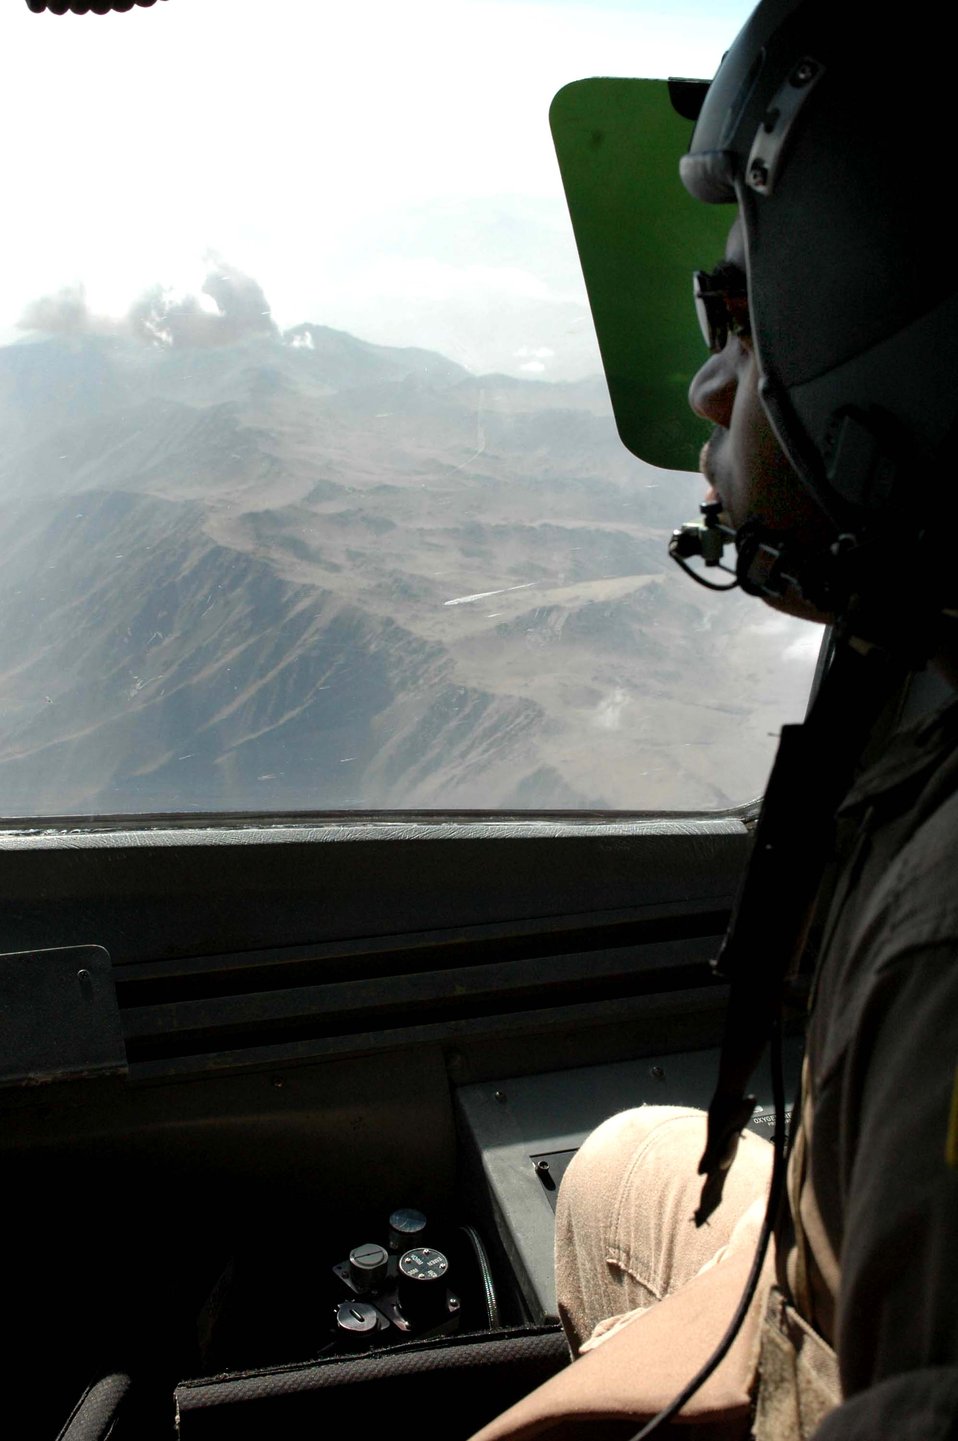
Global missions all in a day's work

Staff Sgt. Larcario Tufts enjoys the view from a C-17 Globemaster III during an Operation Enduring Freedom mission on Aug. 8. Sergeant Tufts is a C-17 loadmaster with Detachment 1 of the 817th Expeditionary Airlift Squadron at Manas Air Base, Kyrgyzstan.